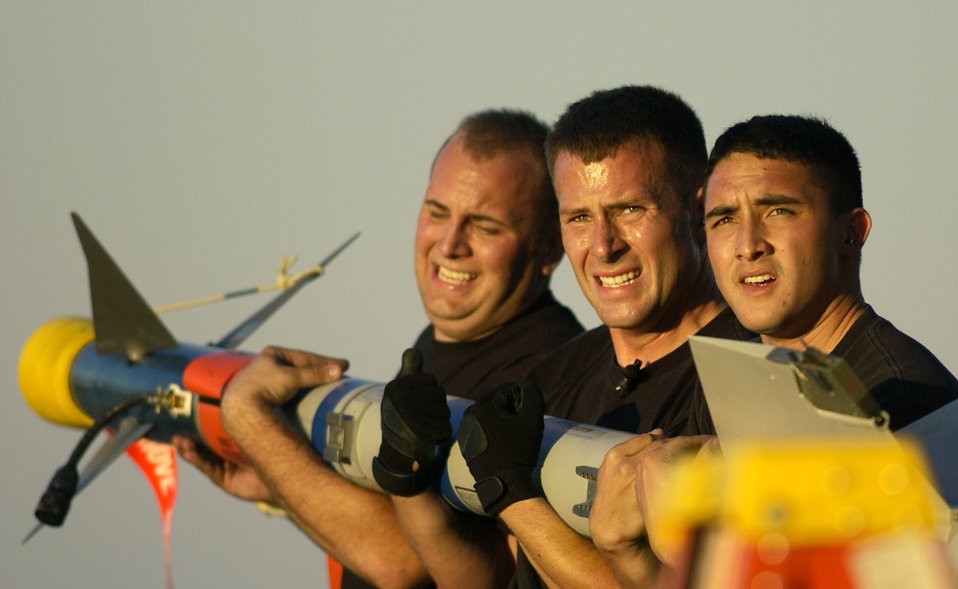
Weapons troops are not cowboys during Loadeo

TYNDALL AIR FORCE BASE, Fla. -- (From left) Senior Airman Mike Raimondo, Staff Sgt. Jacob Watson and Airman 1st Class Joseph Ragadio carry an AIM-9M missile to an F-15 Eagle during the static weapons load competition here Nov. 9. They are weapons loaders assigned to the 71st Fighter Squadron at Langley Air Force Base, Va. The loading competition is part of William Tell, an air-to-air weapons meet currently under way.